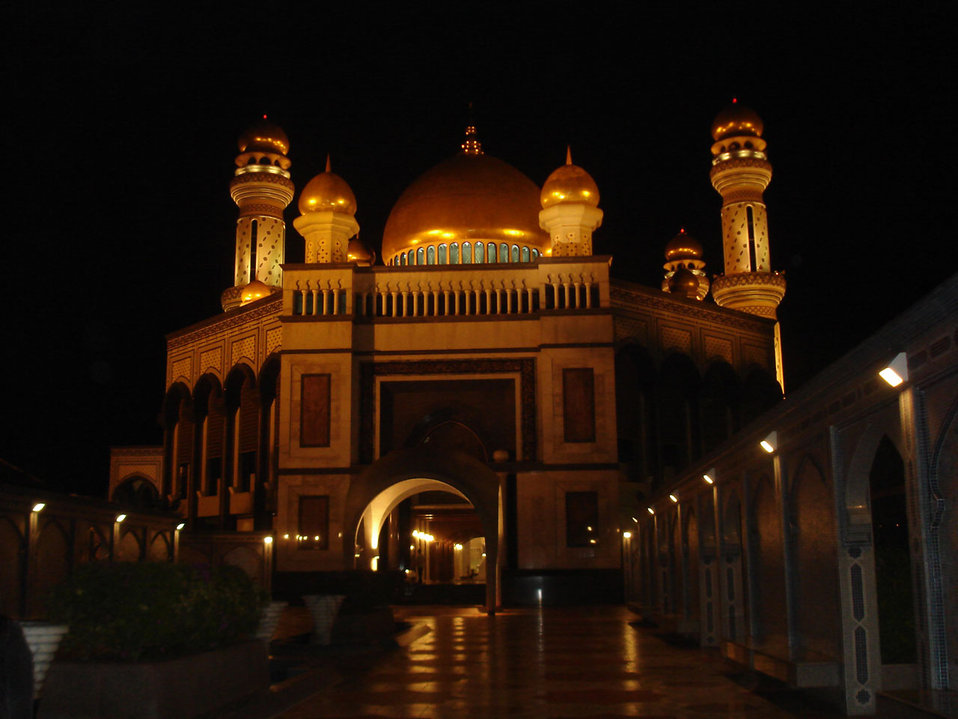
Brunei mosque

Sultan omar ali saifuddin mosque, bandar seri begawan.